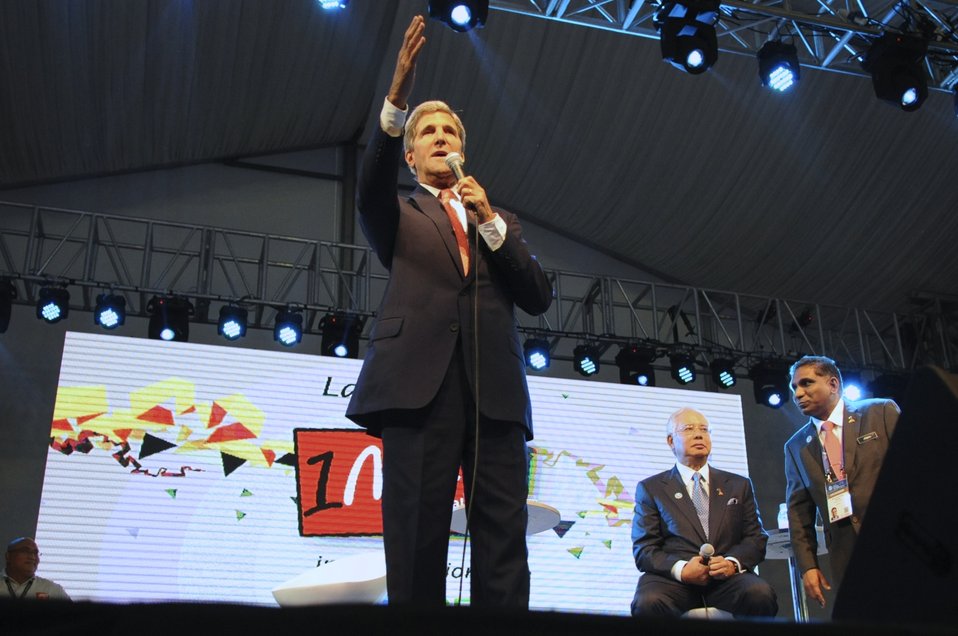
Secretary Kerry Addresses 1MET Kick-Off

U.S. Secretary of State John Kerry address over 4,700 young people gathered for the 1MET Kick-Off, held as part of the Global Entrepreneurship Summit in Kuala Lumpur on October 11, 2013.